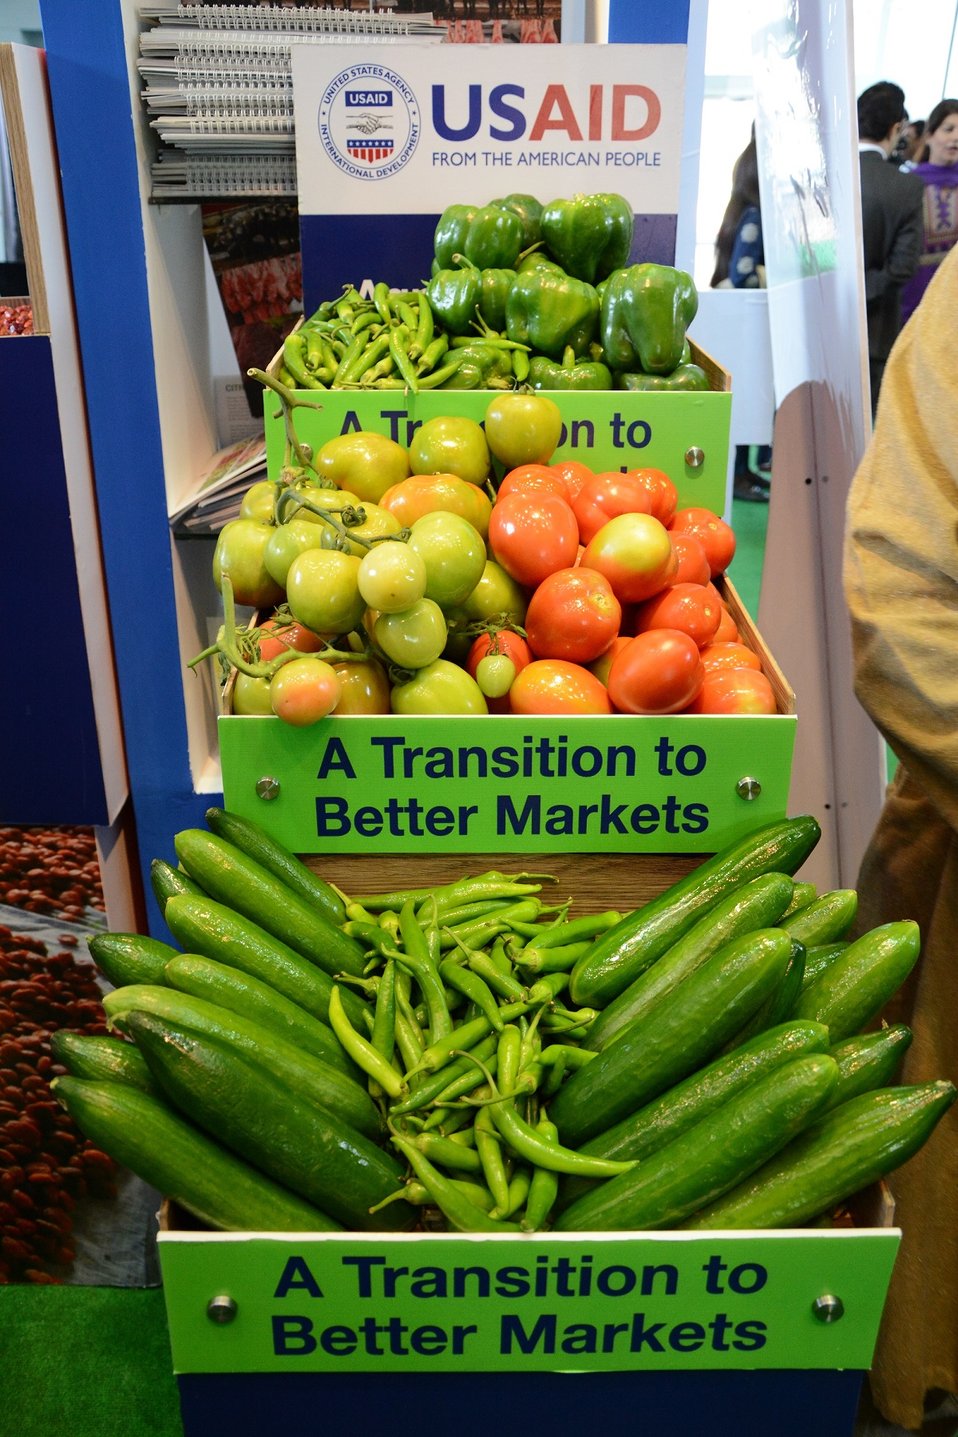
TAP2